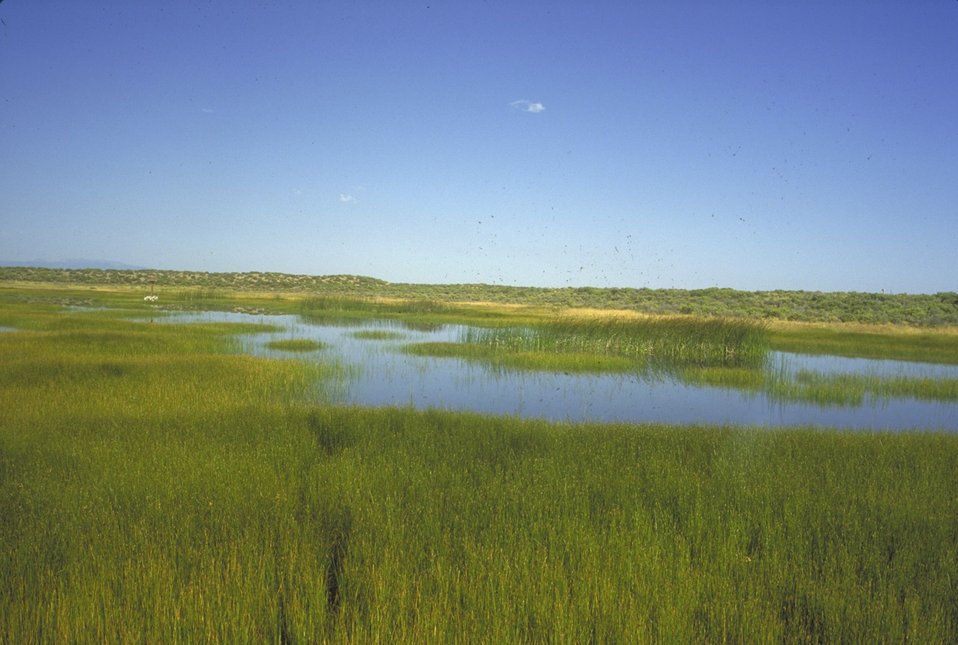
Lake at Blanca Wetlands.